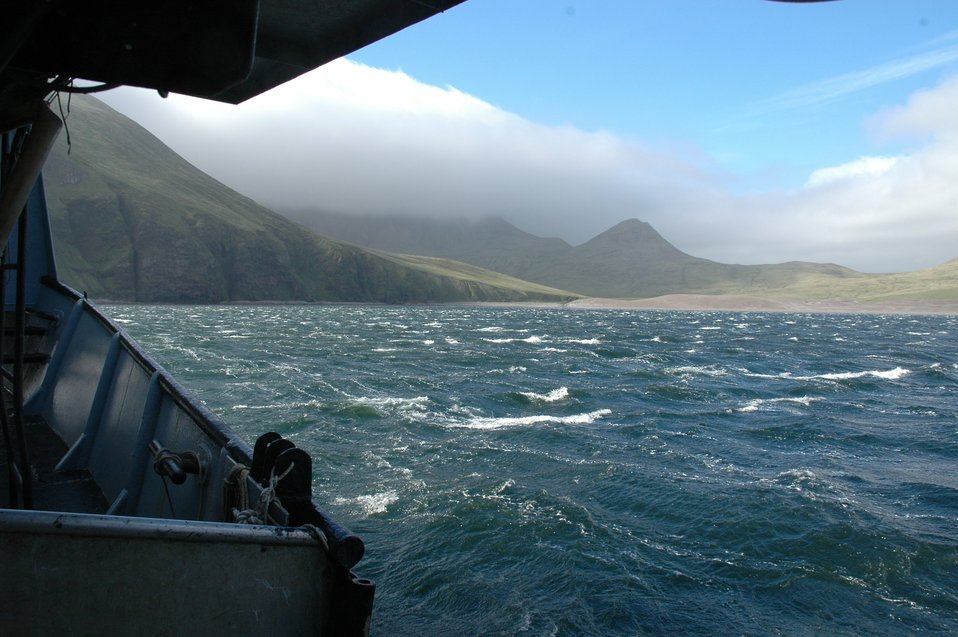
Fog blowing over the island while a williwaw stirs up the near shore waters.